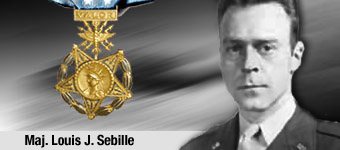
Maj. Louis Sebille history spotlight graphic